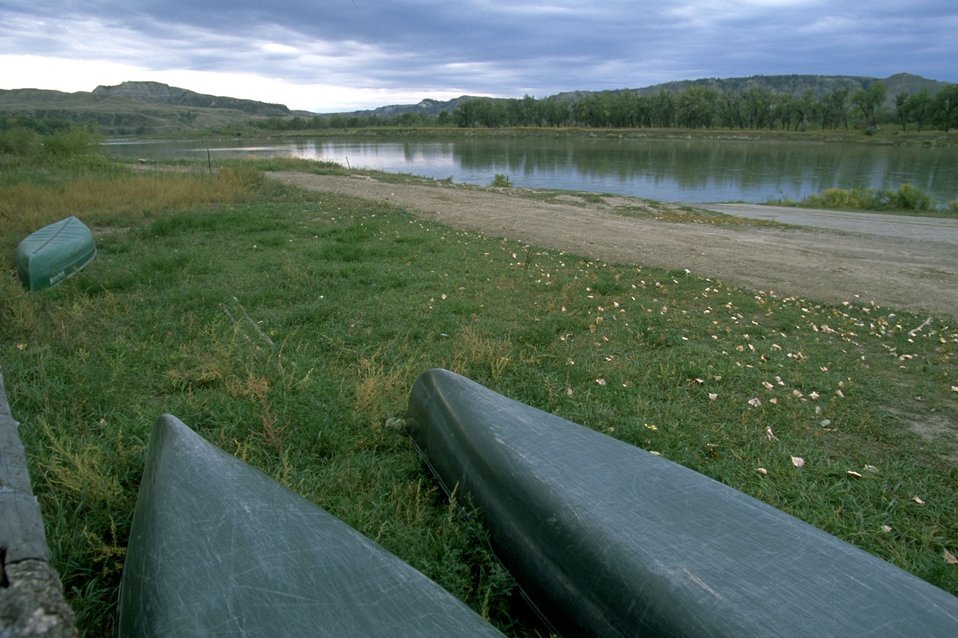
Boat launch at Judith Landing